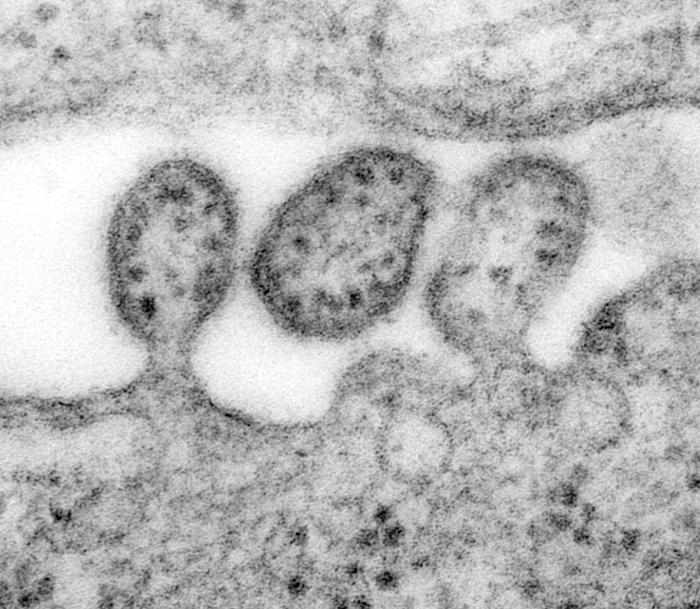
This highly magnified transmission electron micrograph (TEM) depicted some of the ultrastructural details of a number of Lassa virus virions adjacent to some cell debris. The virus, a member of the virus family Arenaviridae, is a single-stranded RNA virus, and is zoonotic, or animal-borne that can be transmitted to humans. The illness, which occurs in West Africa, was discovered in 1969 when two missionary nurses died in Nigeria, West Africa.In areas of Africa where the disease is endemic (that is, constantly present), Lassa fever is a significant cause of morbidity and mortality. While Lassa fever is mild or has no observable symptoms in about 80% of people infected with the virus, the remaining 20% have a severe multisystem disease. Lassa fever is also associated with occasional epidemics, during which the case-fatality rate can reach 50%.